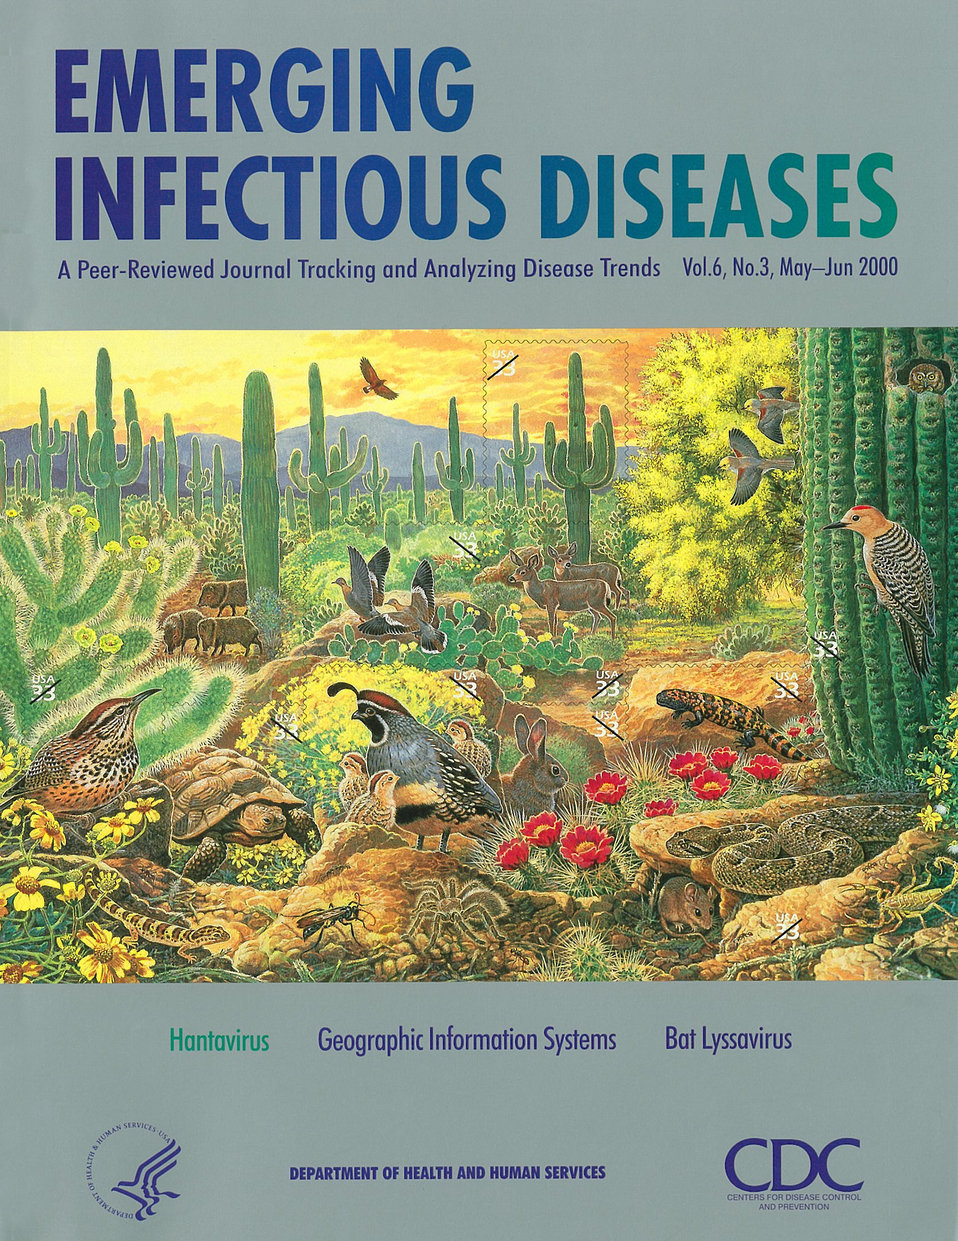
Emerging Infectious Diseases (EID) cover artwork for Volume 6, Number 3, May-June 2000 issue.